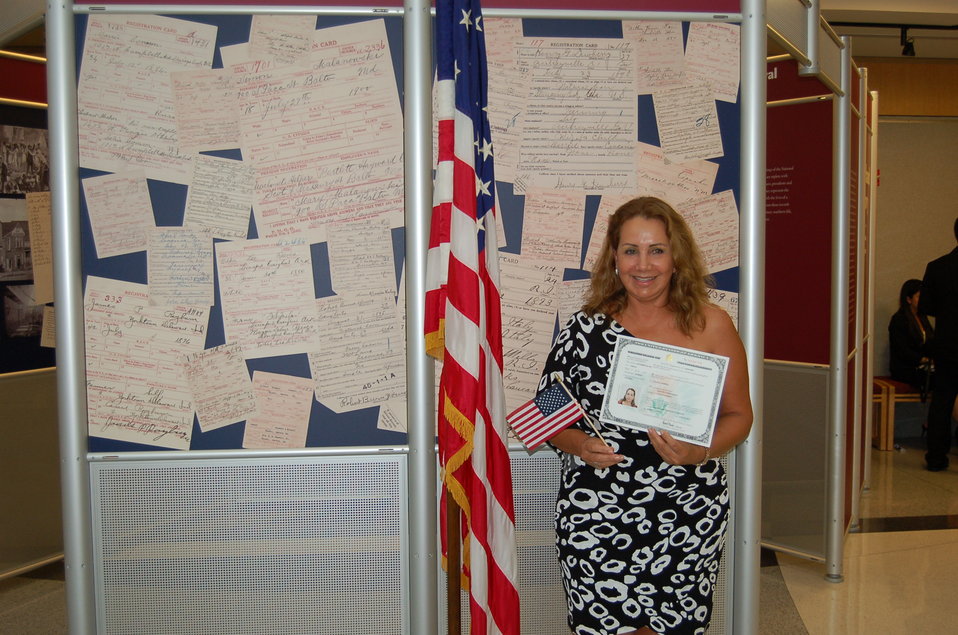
New Citizens